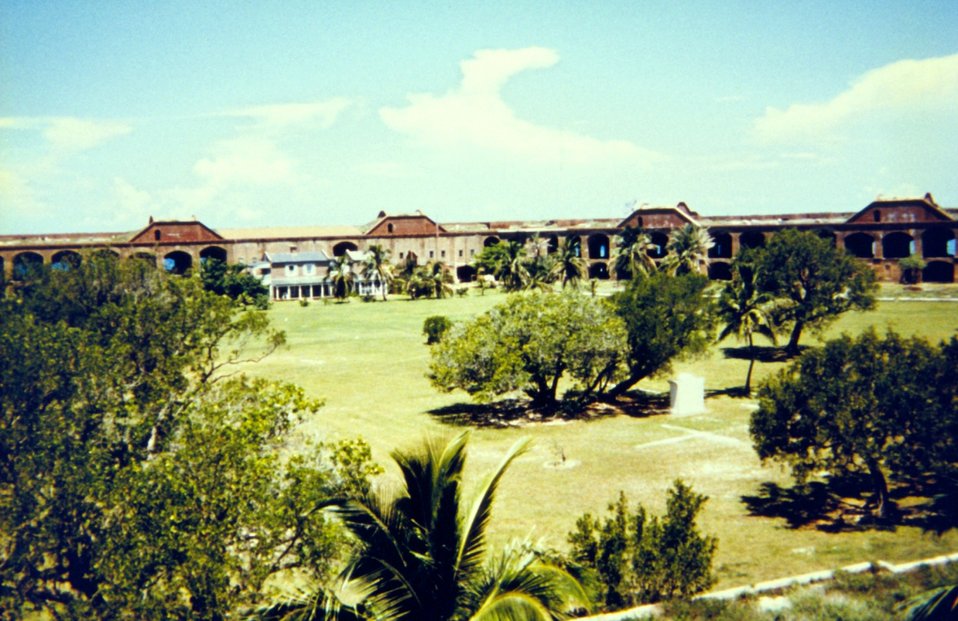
The parade ground at Fort Jefferson.